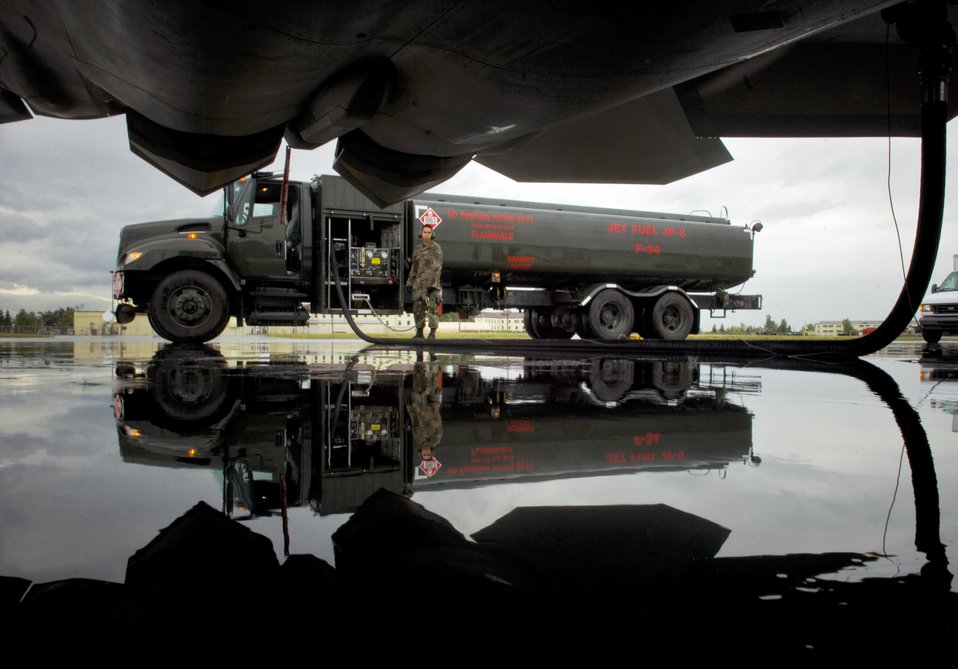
Raptor refueled

Airman 1st Class Michael Herman of the 3rd Logistics Readiness Squadron Fuels Flight refuels the F-22 Raptor after a demonstration Aug. 20 at Elmendorf Air Force Base, Alaska. The flight helped to celebrate the 90th Fighter Squadron's 90th anniversary.